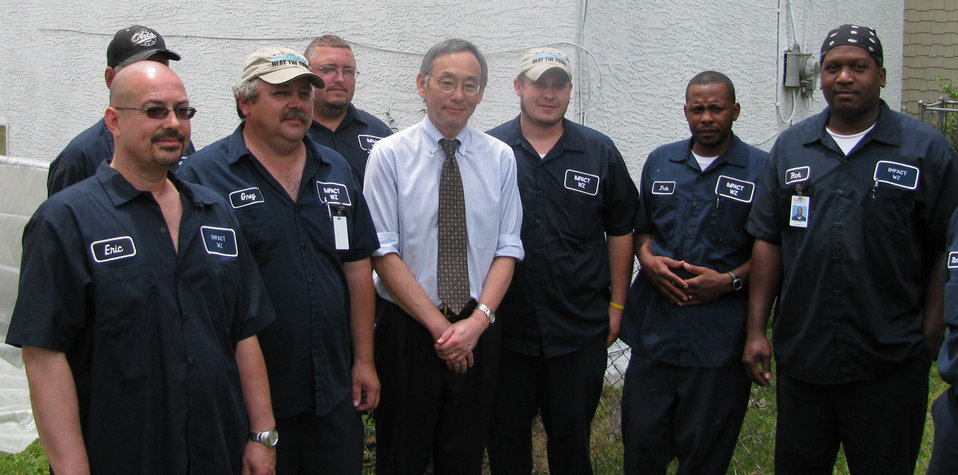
Ohio4